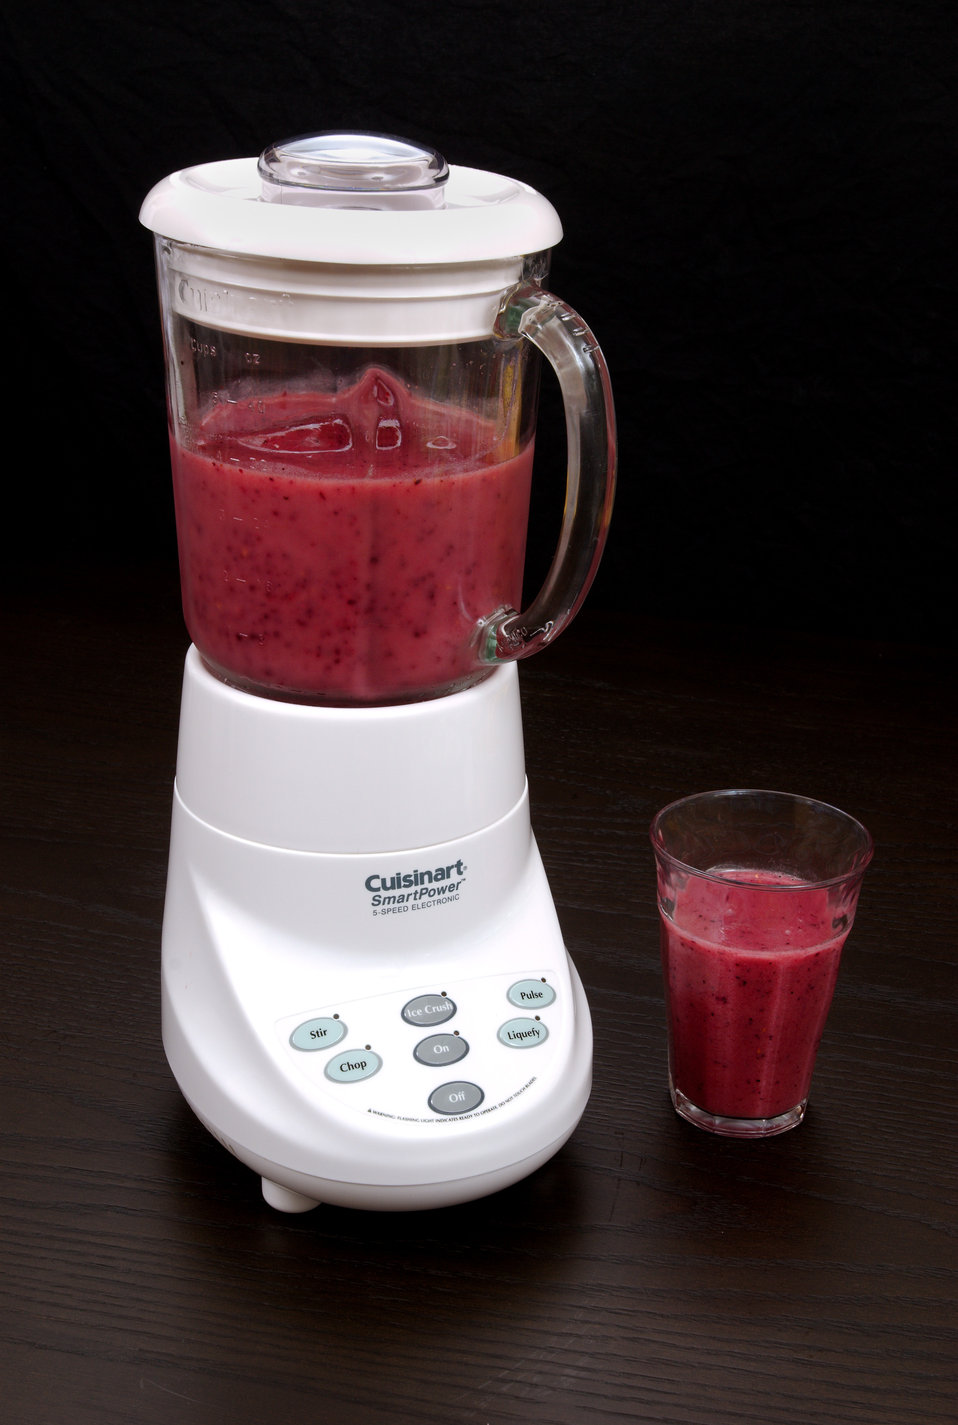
Here is a delicious, refreshing, health-packed treat in the form of an icy cold drink. In this case, the recipe (see the link below) for this Red Cooler smoothie, calls for anti-oxidant-rich, nutrient-dense cranberries, raspberries, cran-raspberry juice, and fat-free raspberry yogurt.